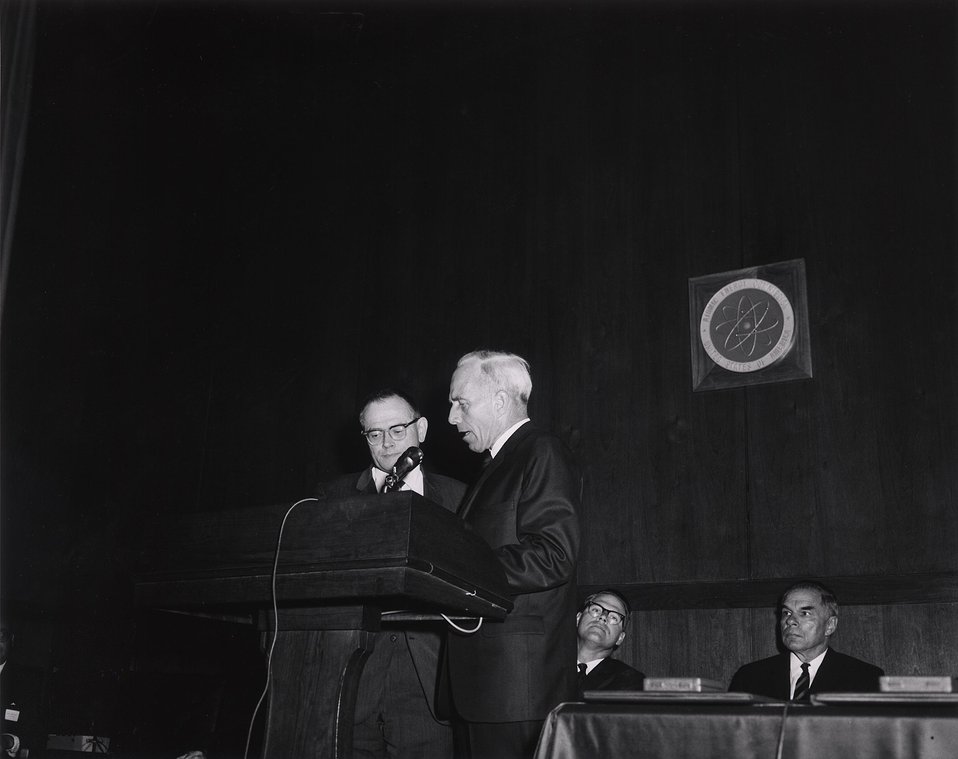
E.O. Lawrence Awards, 1967. Carnegie Institution Auditorium. April 27, 1967. L- Dr. John M. Googin. R- Commissioner W.E. Johnson.